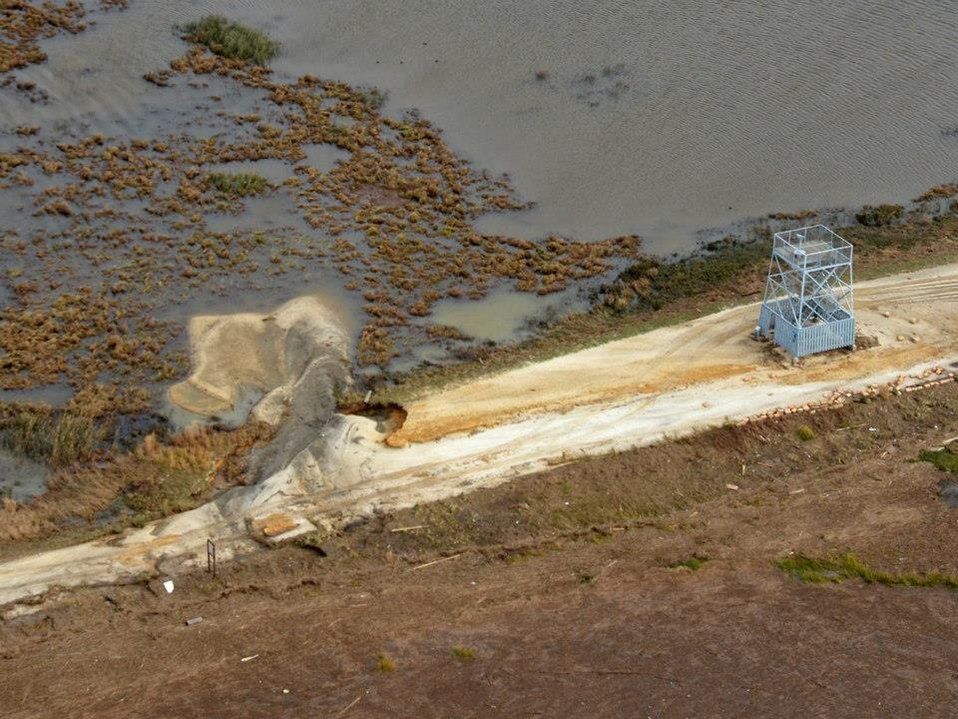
Aerial view of damage at Edwin B. Forsythe National Wildlife Refuge (NJ)

Helicopter view of damage to the wildlife drive south dike near the observation tower.